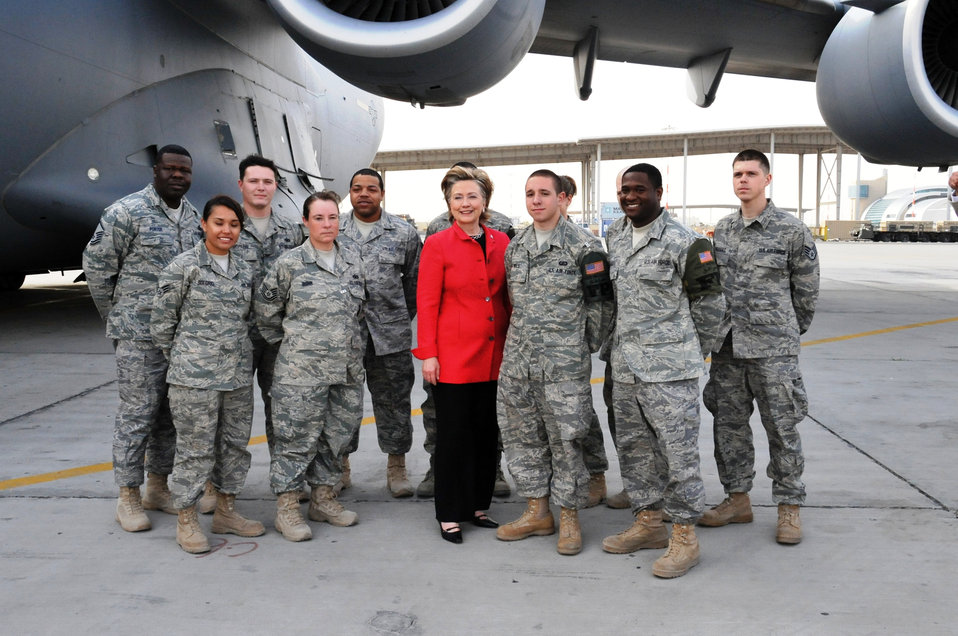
Secretary Clinton With Members of the Office of Military Cooperation - Kuwait

U.S. Secretary of State Hillary Rodham Clinton with members of the Office of Military Cooperation - Kuwait prior to boarding the plane from Kuwait to Iraq in Kuwait City, Kuwait April 25, 2009.